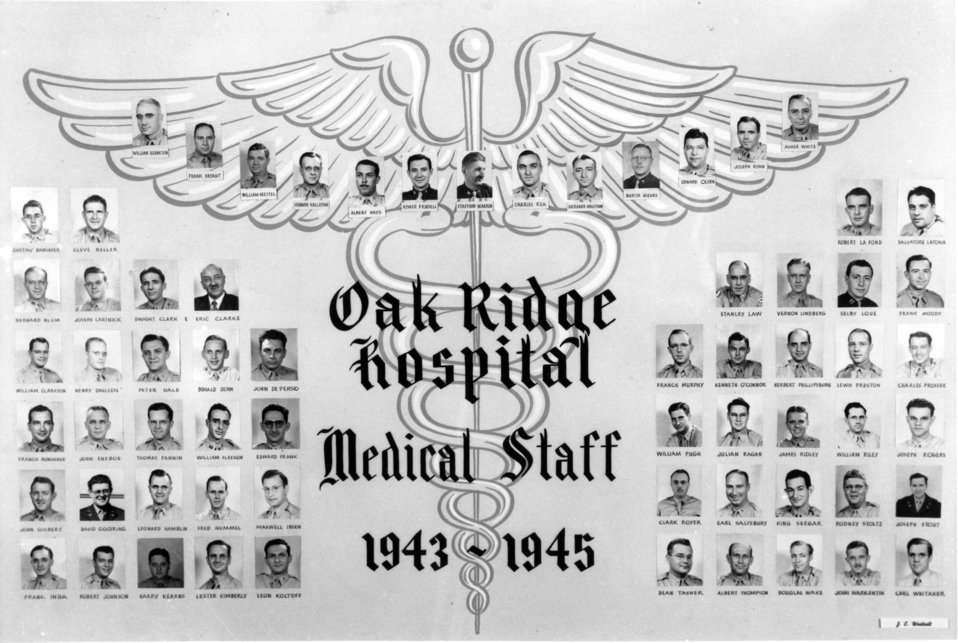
Recreation at Oak Ridge